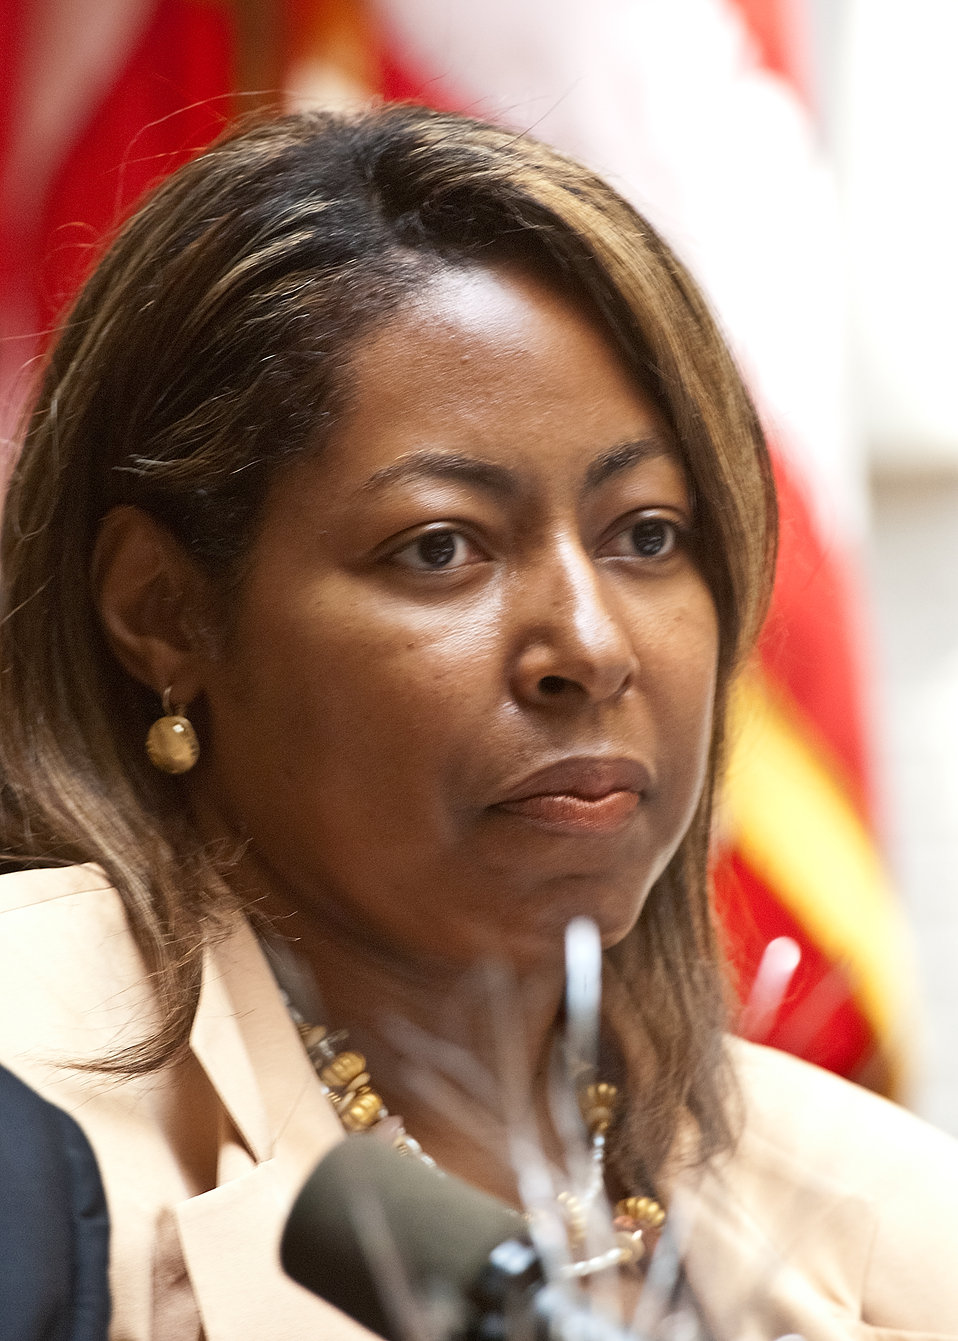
Connie Doyle, Senior Consultant, Trainer and Executive Coach with CI International listens to employee questions during a “Telework Program Party/Brown Bag” event on the patio of the Jamie Whitten Building of United States Department of Agriculture, in Washington, DC, on Tuesday, June 7, 2011. The event included an interactive telework panel and exhibits from the field of telework, telecommuting and mobile work environments. The event was open to all USDA employees, supervisors, managers, human resources staff and USDA telework program coordinators.